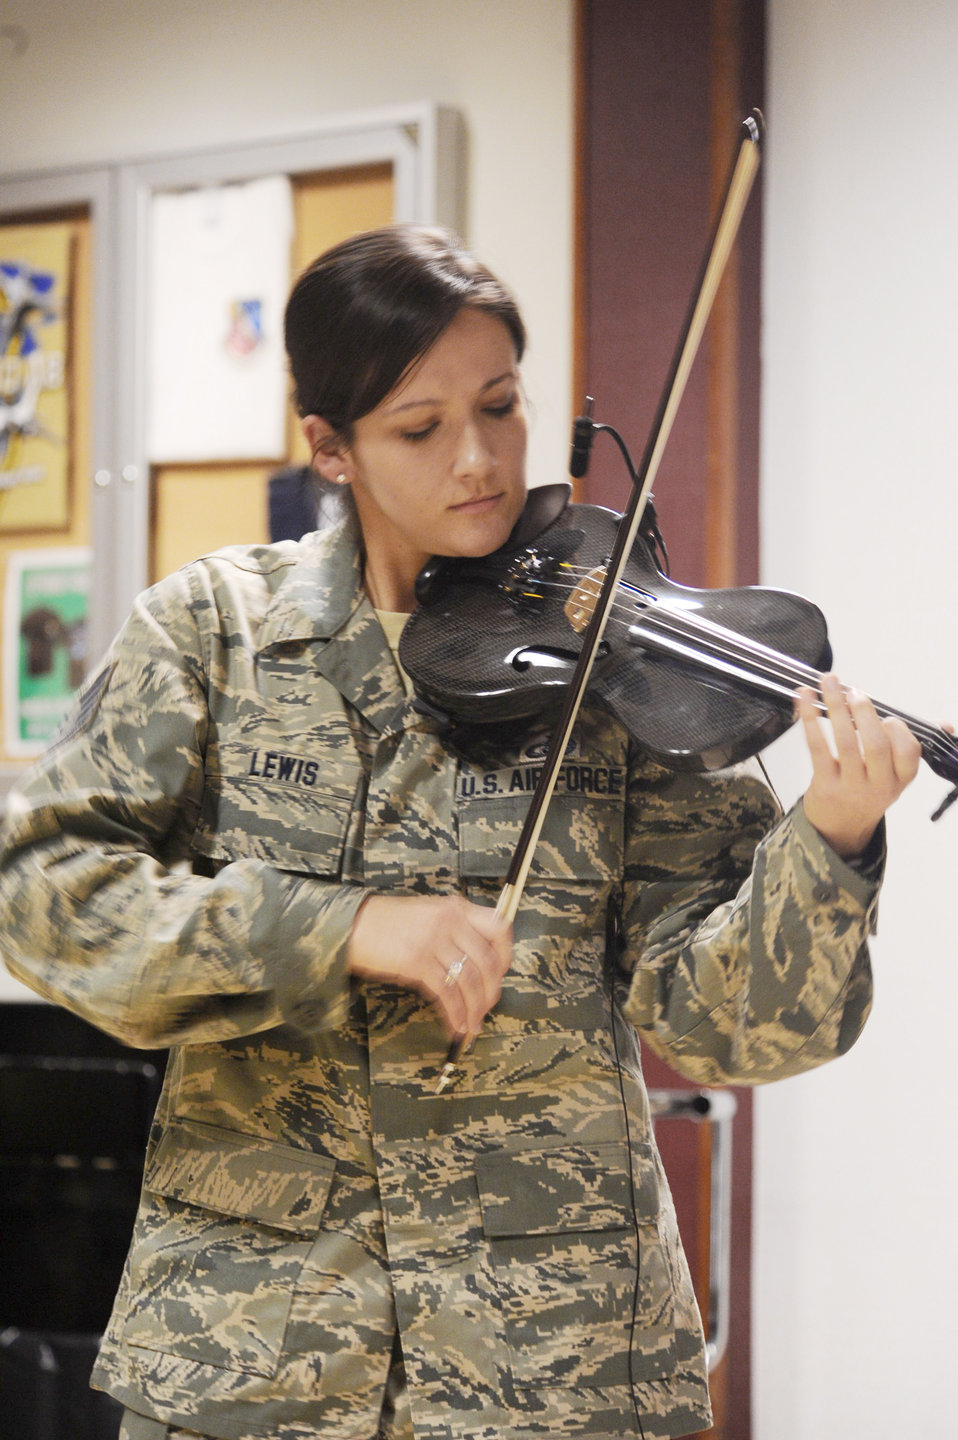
'Celtic Aire' performs in Southwest Asia

Violinist Tech. Sgt. Emily Lewis plays the violin during a performance with